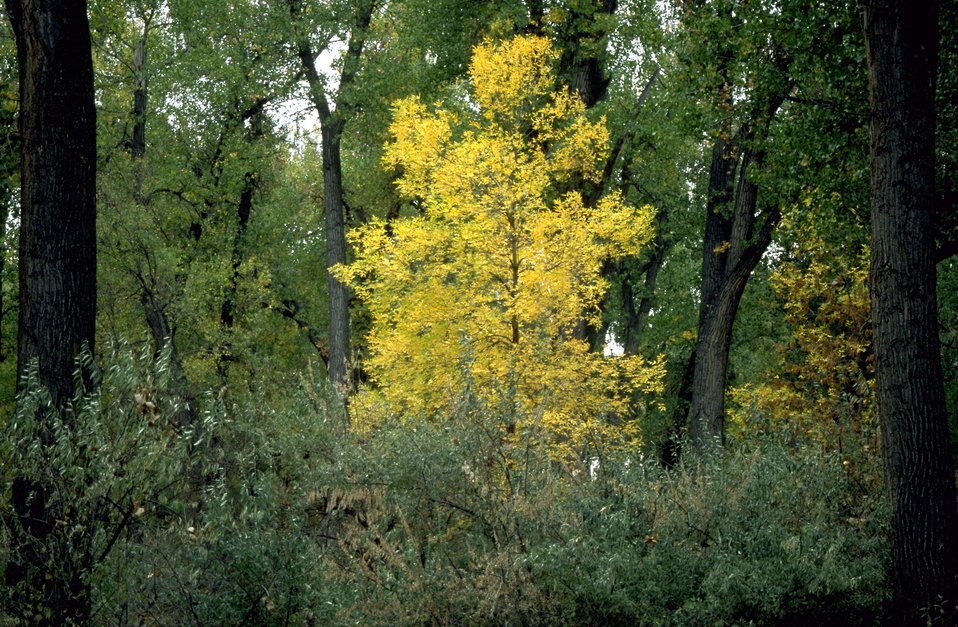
Autumn colors at Howrey Island Recreation Area by the Yellowstone River